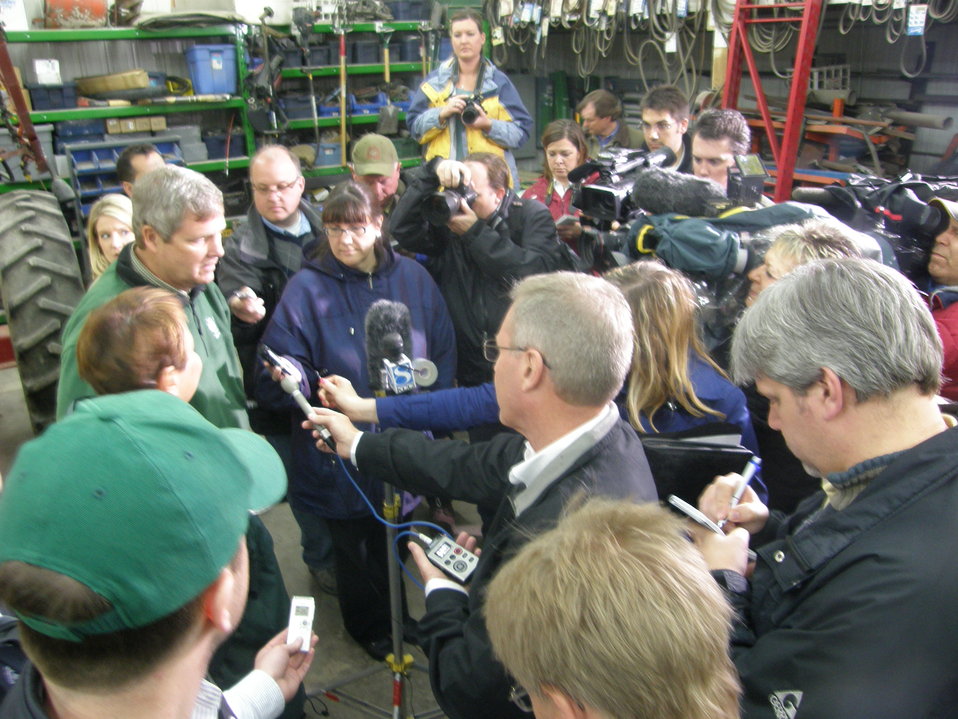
Agriculture Secretary Tom Vilsack (left center) and Environmental Protection Agency Administrator Lisa P. Jackson (right of Secretary Vilsack) talk to the media about the important role farmers and ranchers play in ensuring clean air and water for all Americans. The event took place near Pleasantville, IA, on Tuesday, April 19, 2011.